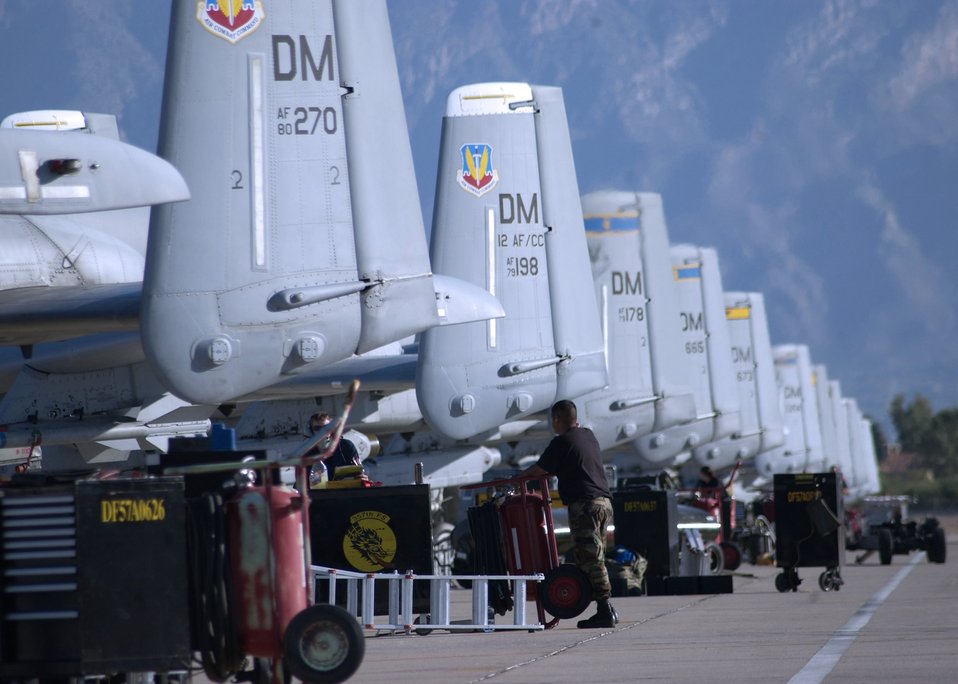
Deploying thunder

DAVIS-MONTHAN AIR FORCE BASE, Ariz. -- A-10 Thunderbolt IIs assigned to the 357th Fighter Squadron here stand by, preparing to deploy during a local exercise. The exercise demonstrated the wing's ability to deploy people, equipment and aircraft to support contingency operations.